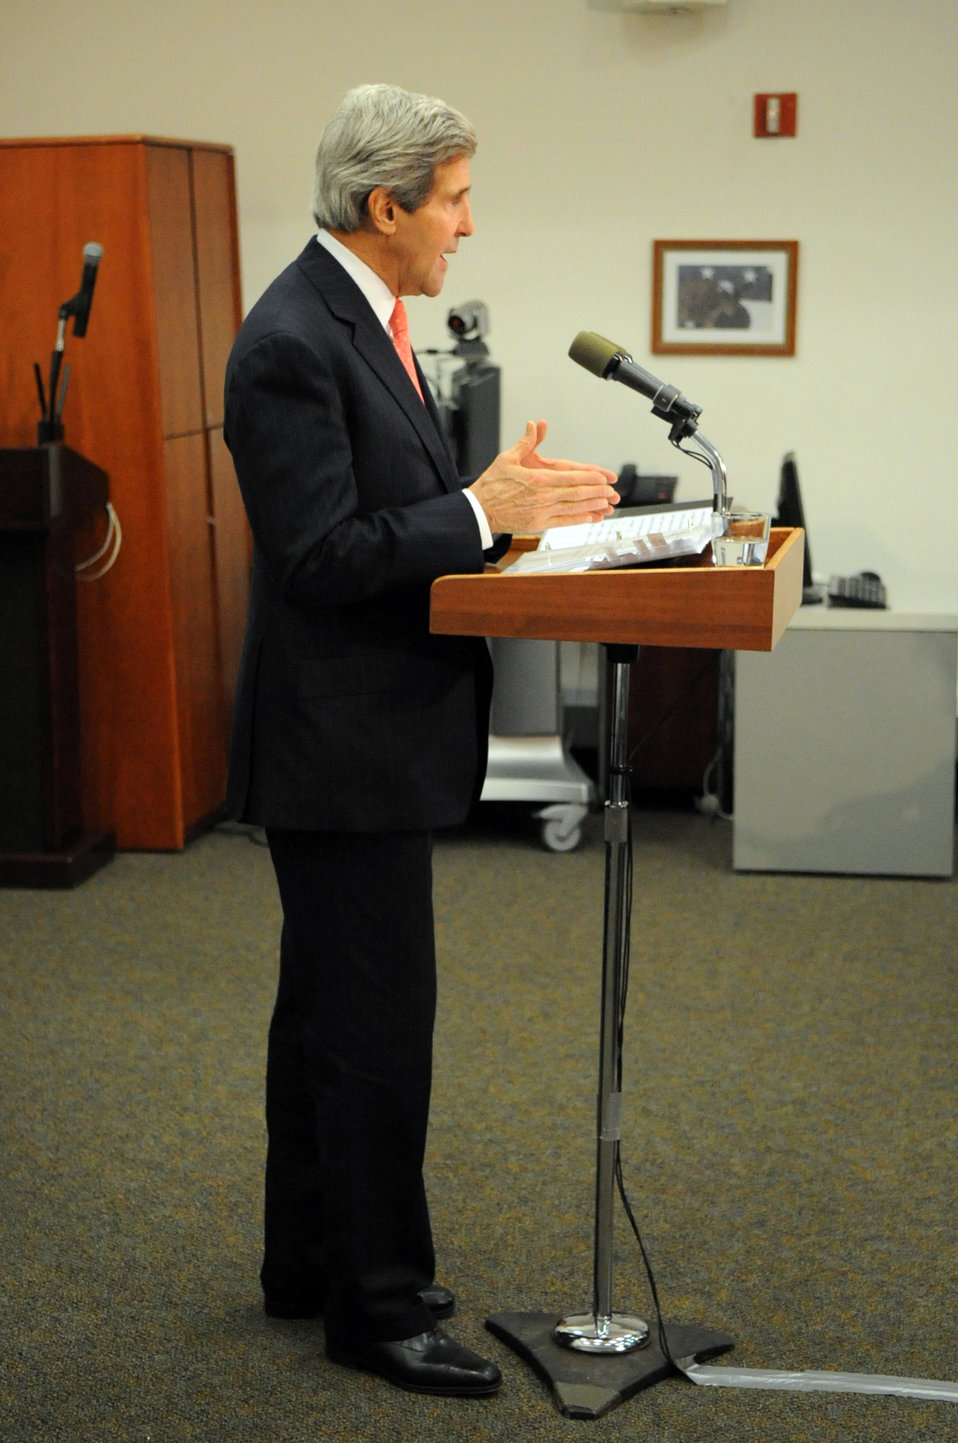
Secretary Kerry Speaks During a Tel Aviv News Conference

U.S. Secretary of State John Kerry addresses reporters during a news conference on December 13, 2013, in Tel Aviv, Israel, that followed meetings with Israeli Prime Minister Benjamin Netanyahu and Palestinian Authority President Mahmoud Abbas.